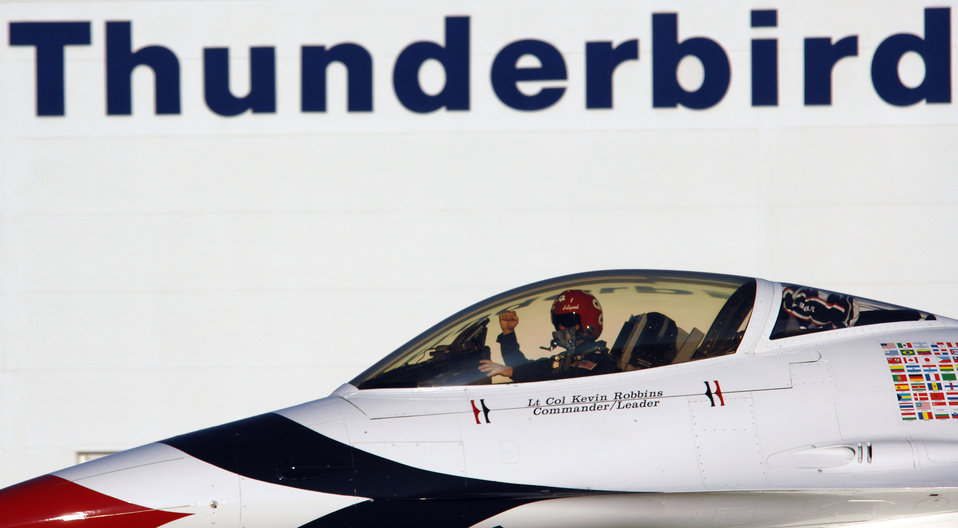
Thunderbirds

Lt. Col. Kevin Robbins taxis out for a training mission Feb. 2 at Nellis Air Force Base, Nev. The U.S. Air Force Thunderbirds accomplish more than 150 training missions in preparation for an eight-month air show season. Colonel Robbins is the demonstration team commander.